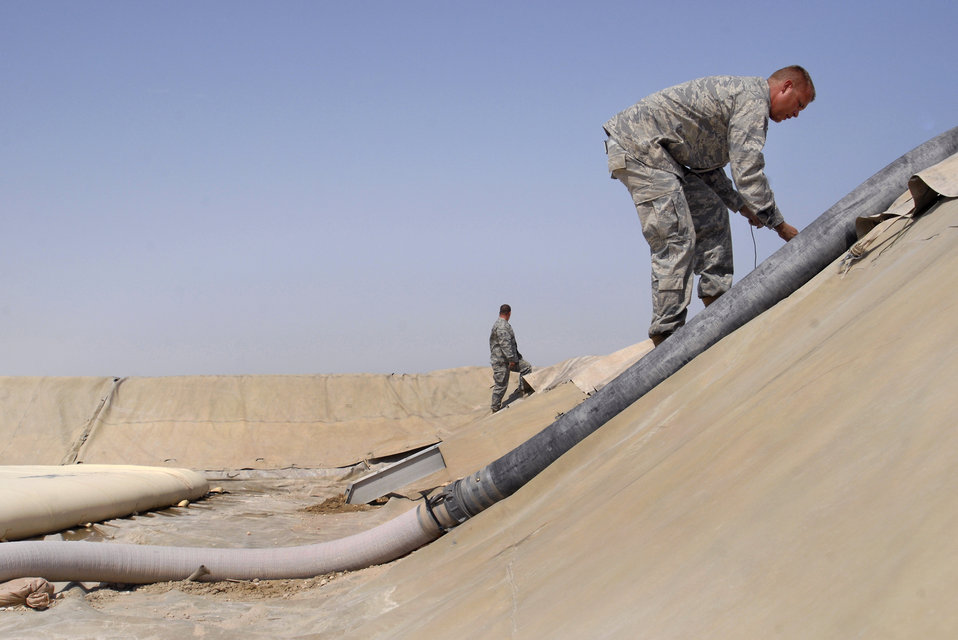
Fueling the way to mission success

Tech. Sgt. Raymond Carpenter ties and secures a berm liner down in the bulk expeditionary receiving transportation holding area April 10 at an air base in Southwest Asia. Fuel stored here is distributed to various locations around the base where needed to ensure mission success. Sergeant Carpenter, the fuels bulk storage supervisor with the 379th Expeditionary Logistics Readiness Squadron, hails from Princeton, Idaho, and is deployed from Ellsworth Air Force Base, S.D.